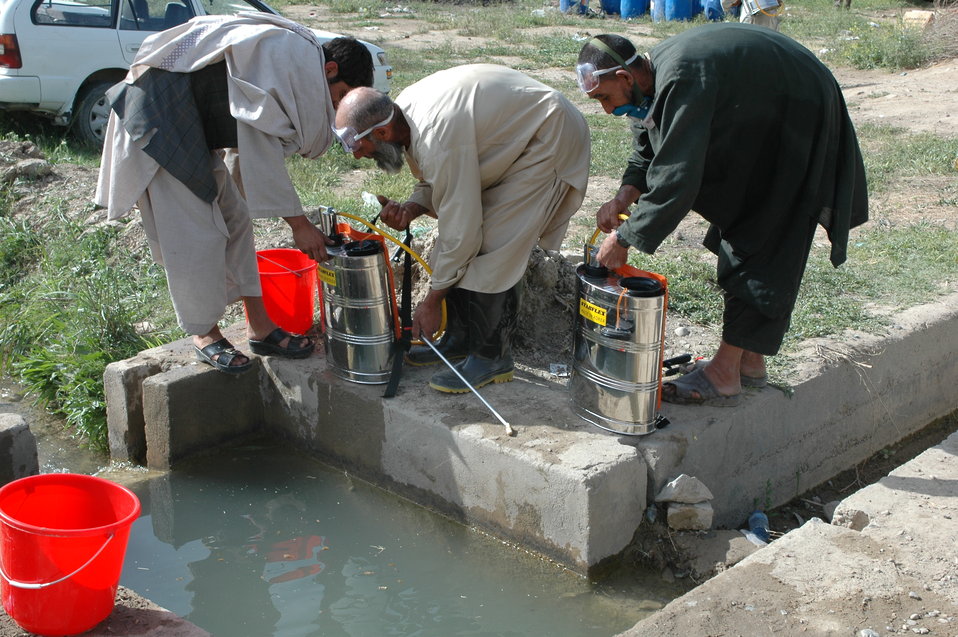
Dr Shah Visits Argandab April 10, 2010